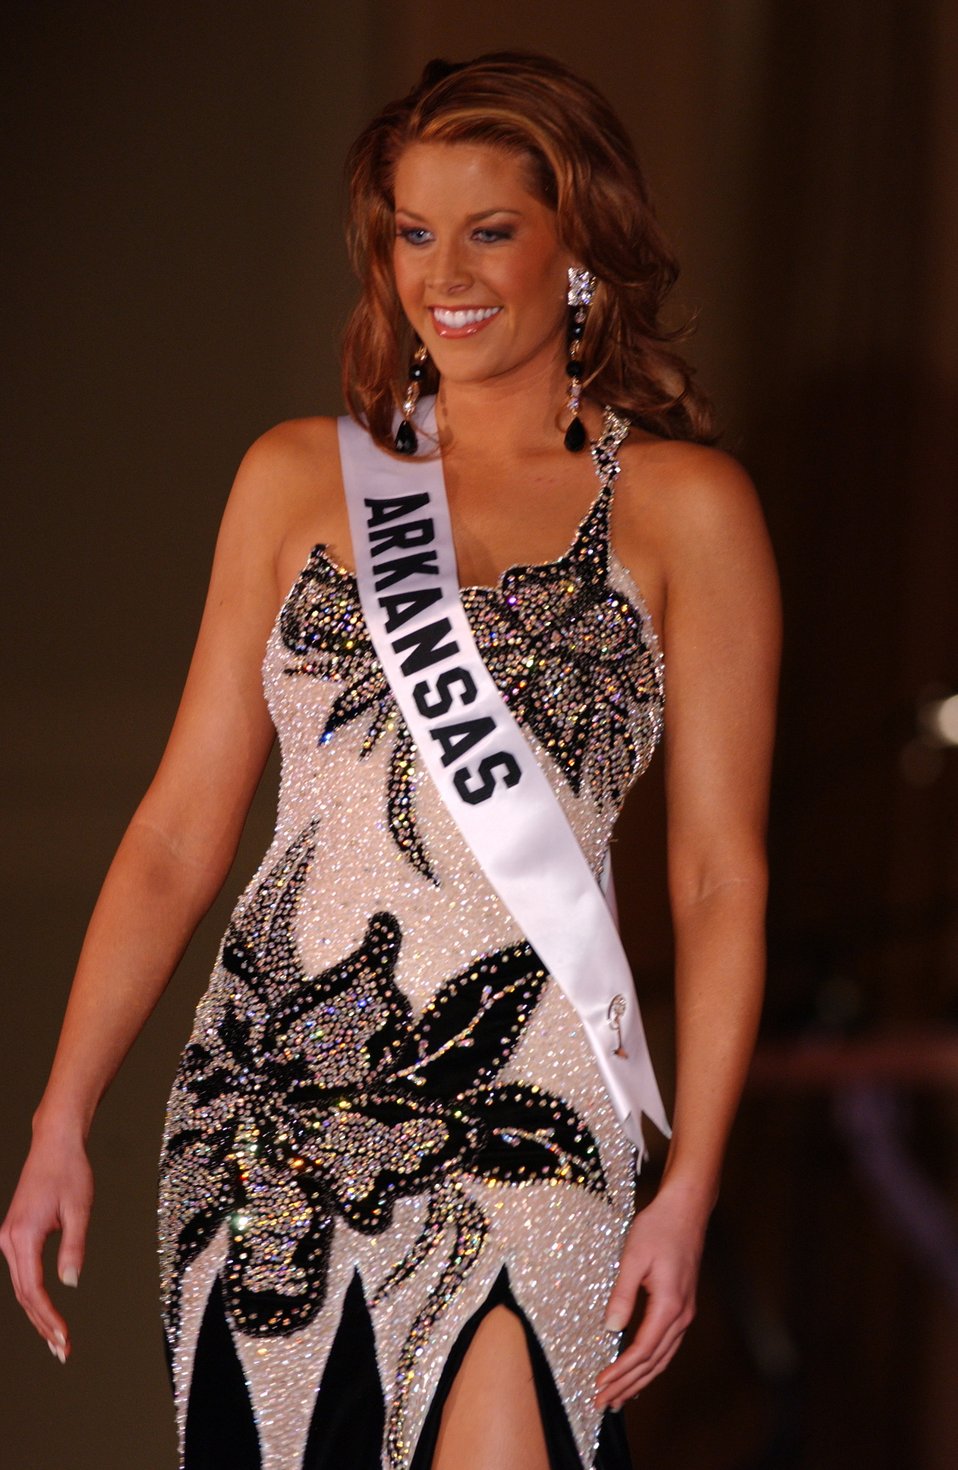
Air Force lieutenant in Miss USA contest

Kelly George, a U.S. Air Force second lieutenant and deputy chief of Public Affairs at Little Rock AFB, Ark., competed in Hollywood, Calif., March 19 in the preliminary rounds of the Miss USA contest. The Miss USA contest will air live on NBC March 23 at 8 p.m. CST. Kelly George was selected as Miss Arkansas USA Oct. 28.